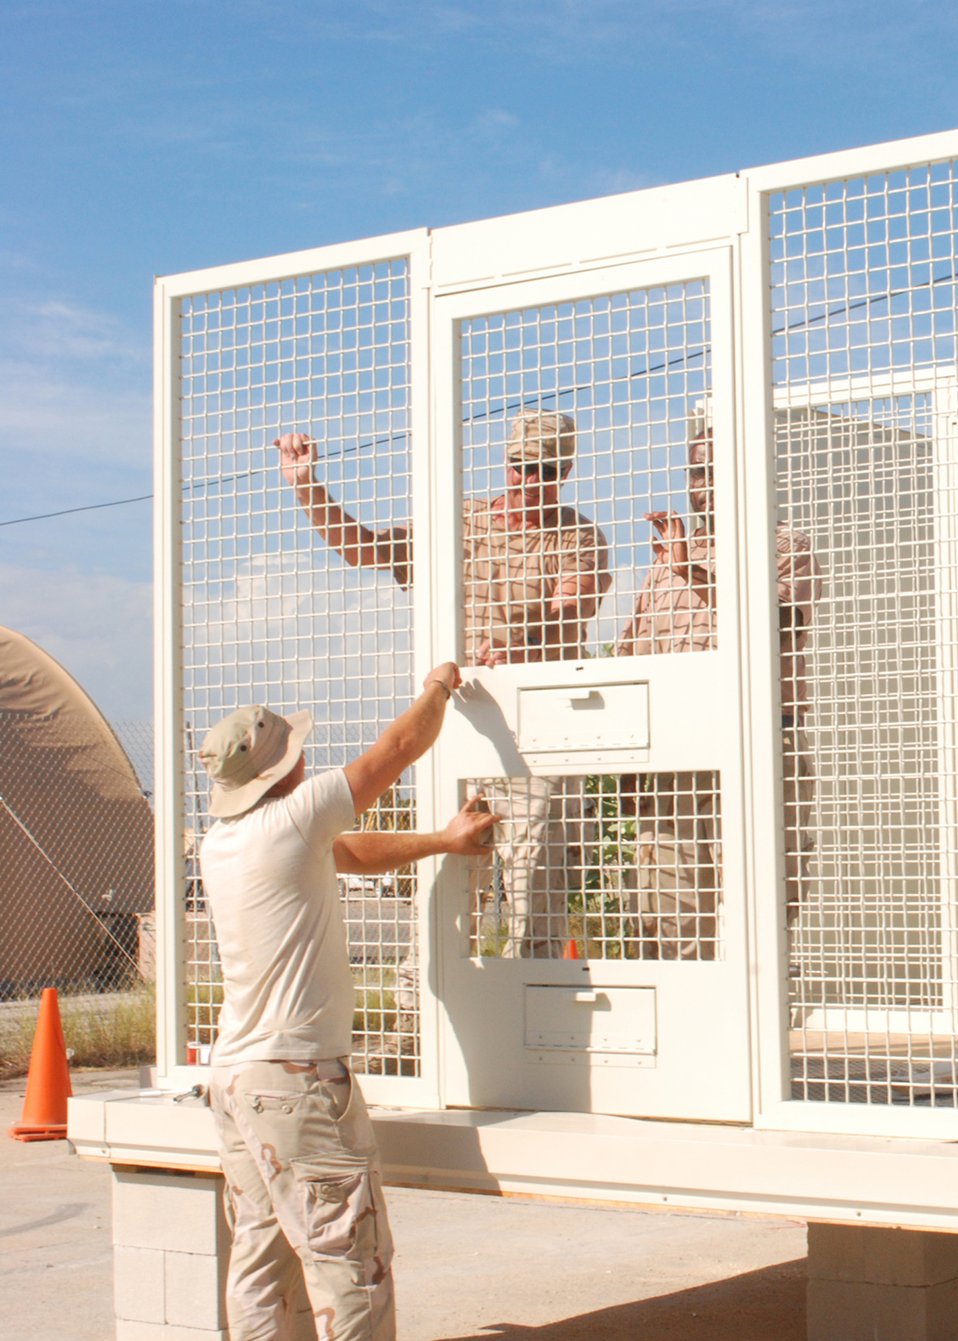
First phase of legal complex nears completion

Staff Sgt. Kevin Gordon, Senior Master Sgt. Patrick Obrien and Senior Airman Kevin Green construct a special cell, Dec. 27, that will be used to hold detainee witnesses during military commissions. This is one of many new features of the expeditionary legal complex. Joint Task Force Guantanamo conducts safe and humane care and custody of detained enemy combatants. The JTF conducts interrogation operations to collect strategic intelligence in support of the war on terrorrism and supports law enforcement and war crimes investigations.